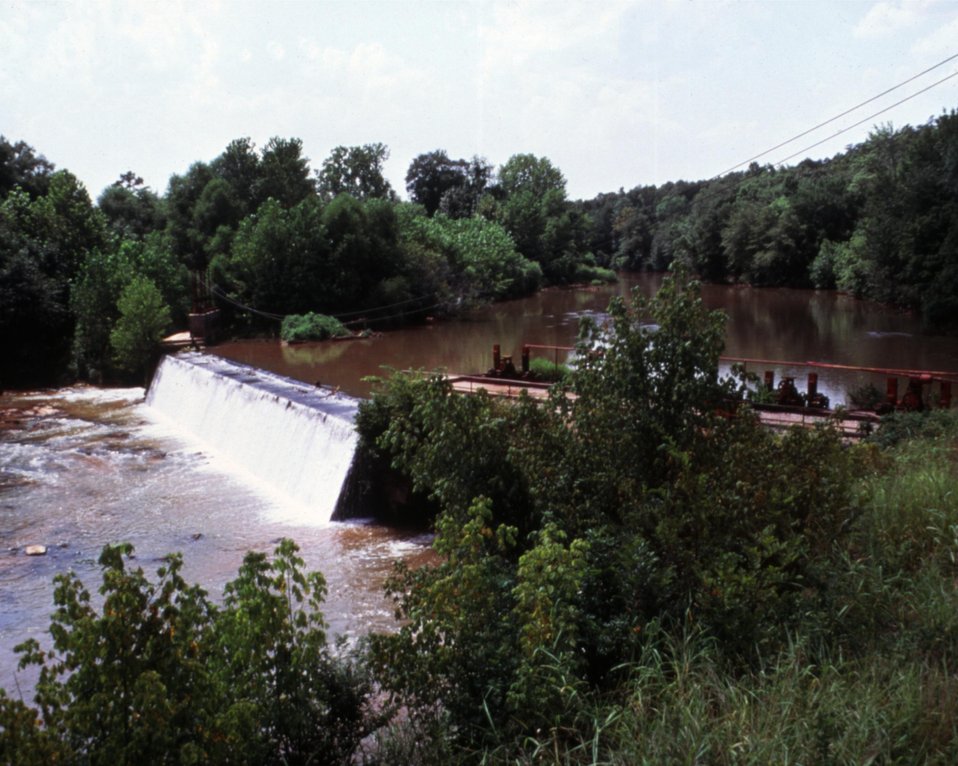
OVERALL VIEW OF PROJECT SITE PRIOR TO CONSTRUCTION.

THE DOE SMALL-SCALE HYDROPOWER PROGRAM CONSISTS OF 19 PROJECTS AND DEMONSTRATES THE VIABILITY OF SMALL-SCALE HYDRO-POWER WITH AVAILABLE TECHNOLOGY. THE BROAD RIVER PROJECT, BEGUN IN JANUARY, 1983, WENT ON LINE DECEMBER 27, 1987. UTILIZING ONE OPEN-PIT TUBULAR TURBINE THAT PRODUCES A MAXIMUM OF 4,140 KILOWATTS, THE DAM PROVIDES A GROSS HEAD OF 20.2 FEET WITH AN ANNUAL STREAM FLOW OF 2,472 CFS.